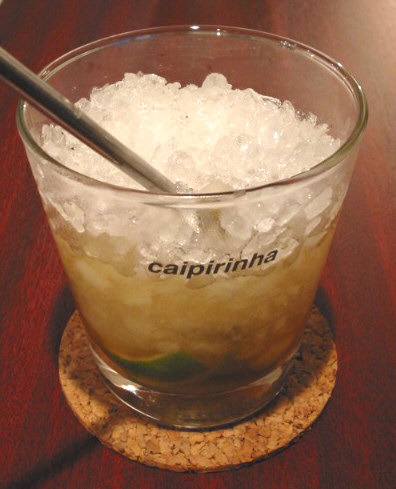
Brasilian drink Caipirinha Português: Drink brasileiro Caipirinha